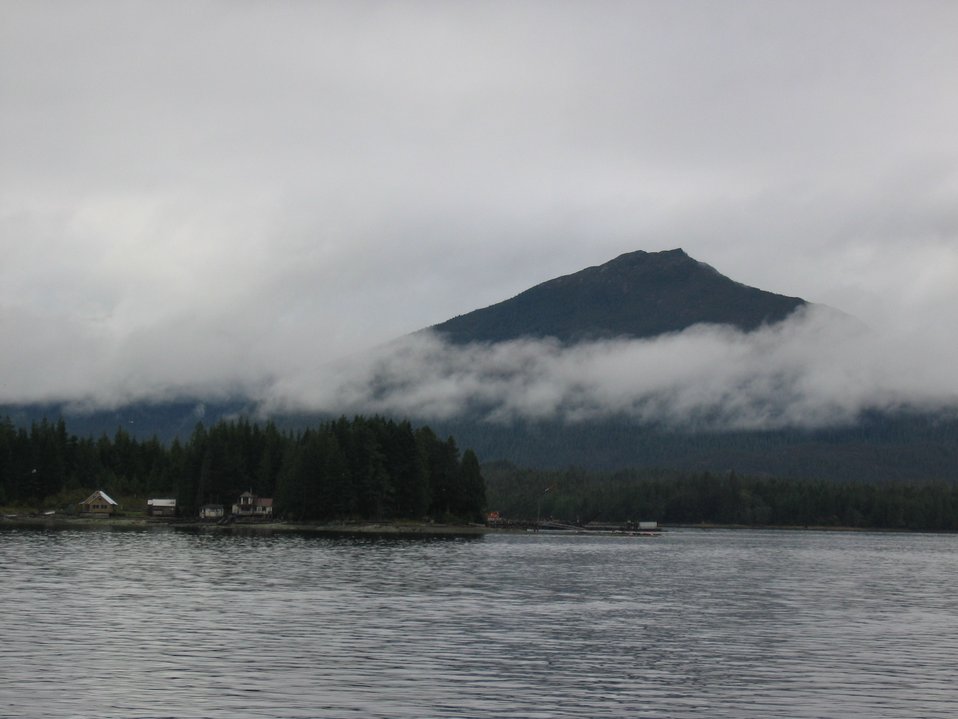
Mountains in the mist at Ketchikan.